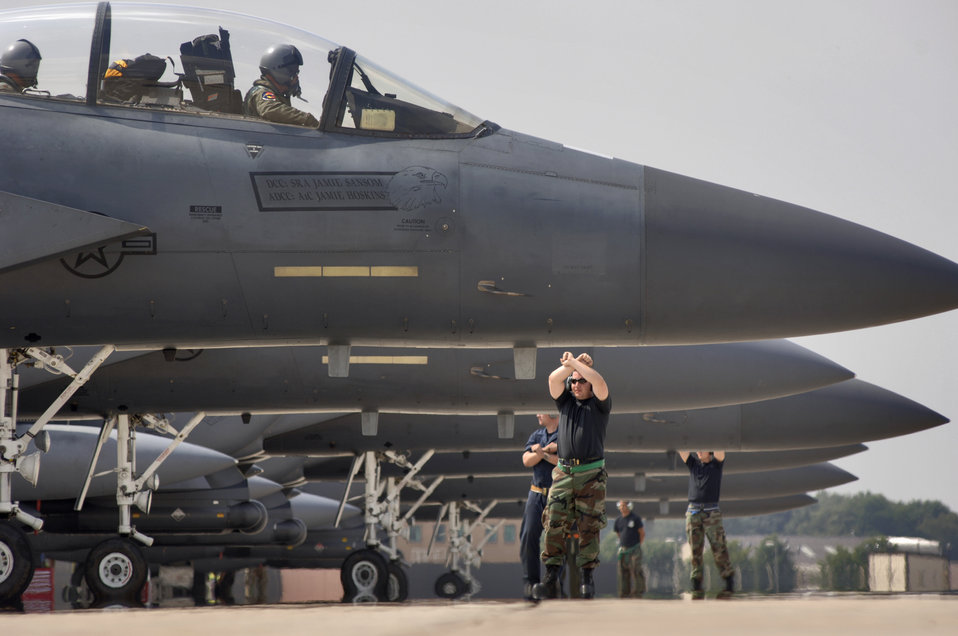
Lakenheath Strike Eagles return from Bulgaria

Crew chiefs marshal F-15E Strike Eagles to their parking spaces at Royal Air Force Base Lakenheath, England, on Friday, July 28. The 492nd Fighter Squadron jets were returning home from a two-week deployment to Graf-Isnatievo Air Base, Bulgaria, where they took part in exercise Immediate Response, which began July 17. Airmen from the 48th Fighter Wing provided support at the joint, trilateral exercise with the Bulgarian and Romanian militaries and U.S. Soldiers. The Airmen practiced ground attack and air-to-air tactics.